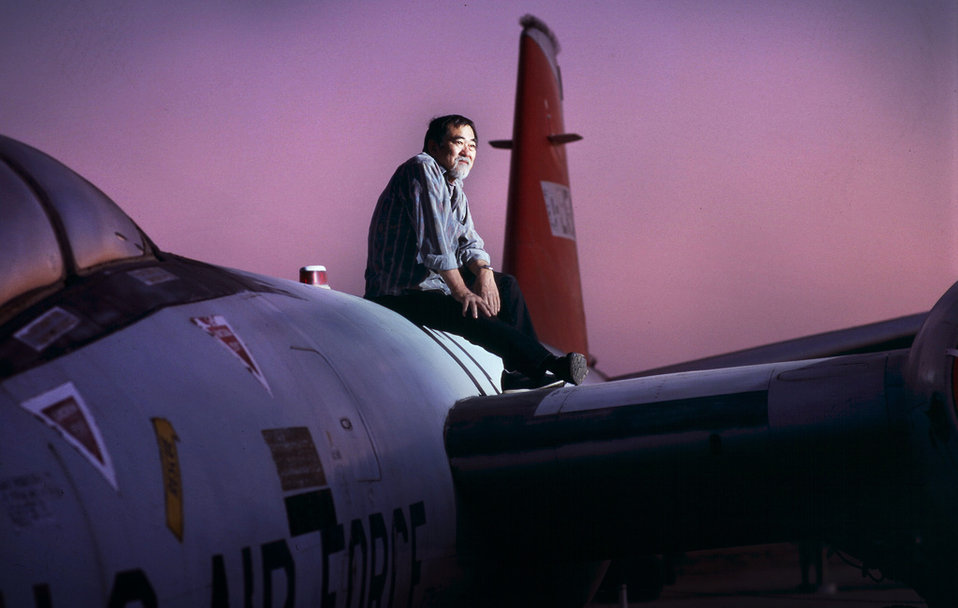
Pioneers in Blue

In 1955, retired Lt. Dick Uyehara, a Korean War veteran, was forced to eject from a B-57, like the one he's sitting on here, at 600 miles per hour, losing both his legs. He had to struggle free from a malfunctioning ejection seat only to have the vertical stabilizer hit him during the bailout, severing one leg and mangling the other. Teri, his wife said, he never let it beat him, although he was in great pain. After release, he never used a wheelchair, preferring to walk, unaided, on prosthetic legs.